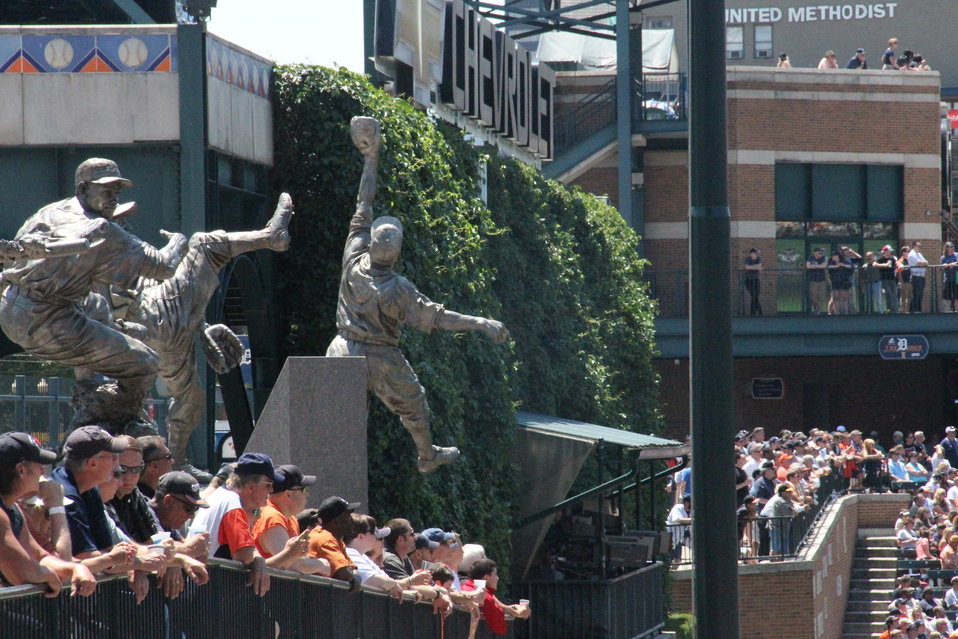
Statues at Detroit Tigers Stadium